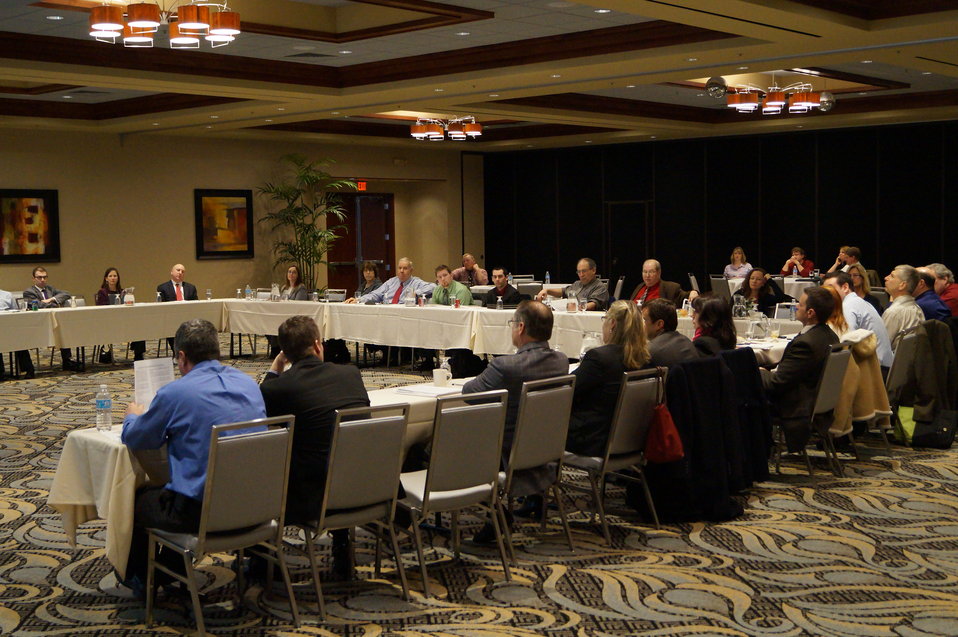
Stakeholders meet with U.S. Department of Agriculture (USDA) staff in New York on Feb. 26, 2013 to discuss ways to use USDA Rural Development (RD) programs to help small businesses create jobs and grow businesses.